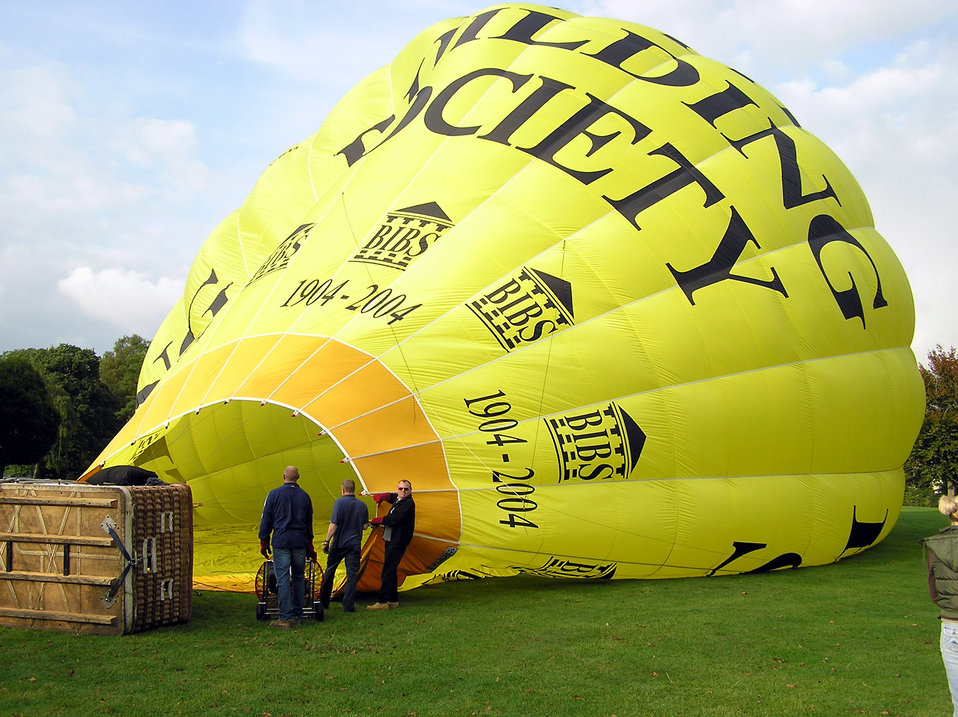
Yellow.balloon.inflation.arp